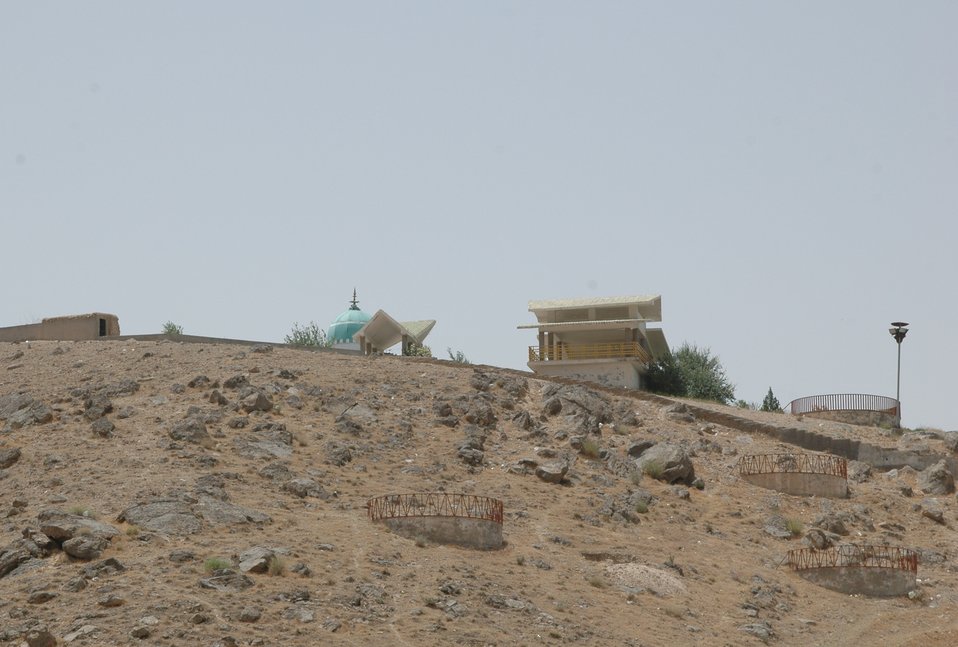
CODEL Berman